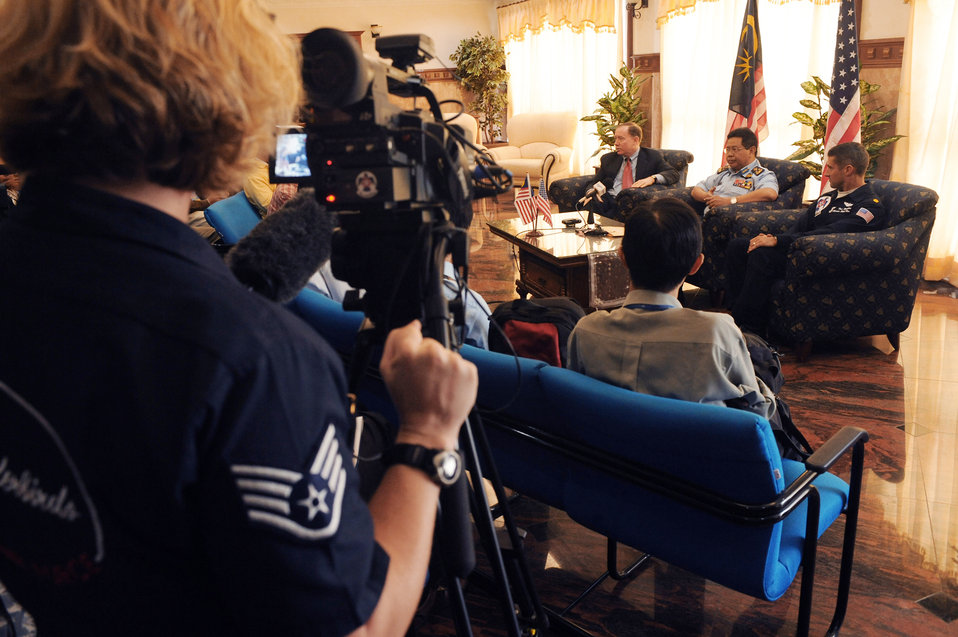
Thunderbirds perform for Malaysian audience

Maj. Tony Mulhare (right) particpates in a press conference with the Malaysian government and media Oct. 1, 2009, in Kuala Lumpur, Malaysia. The .S. Air Force Air Demonstration Squadron, the Thunderbirds, participated in the Malaysian air show. The Thunderbirds' tour of the Pacific aids in fostering friendships with U.S. allies, which helps to promote security and stability in the region.